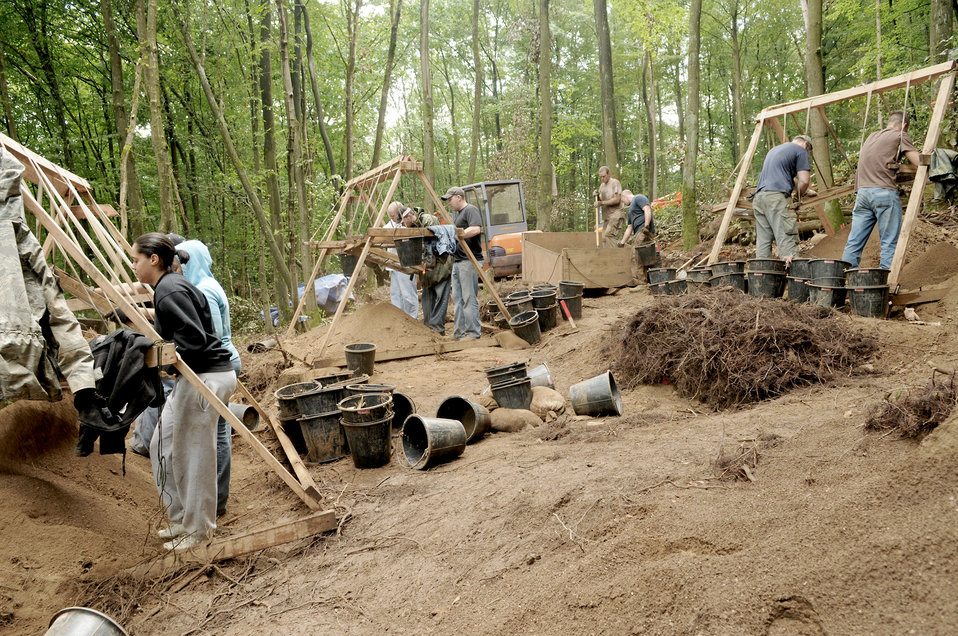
Joint team searches for fallen Airmen in local German forest

Servicemembers sift through dirt on a local logging trail in search of wreckage from an aircraft downed during World War II during a Joint Prisoners of War/Missing in Action Accounting Command mission July 28, 2010, in Rheinland-Pfalz, Germany. The mission of the JPAC is to achieve the fullest possible accounting of all Americans missing as a result of the nation's past conflicts.